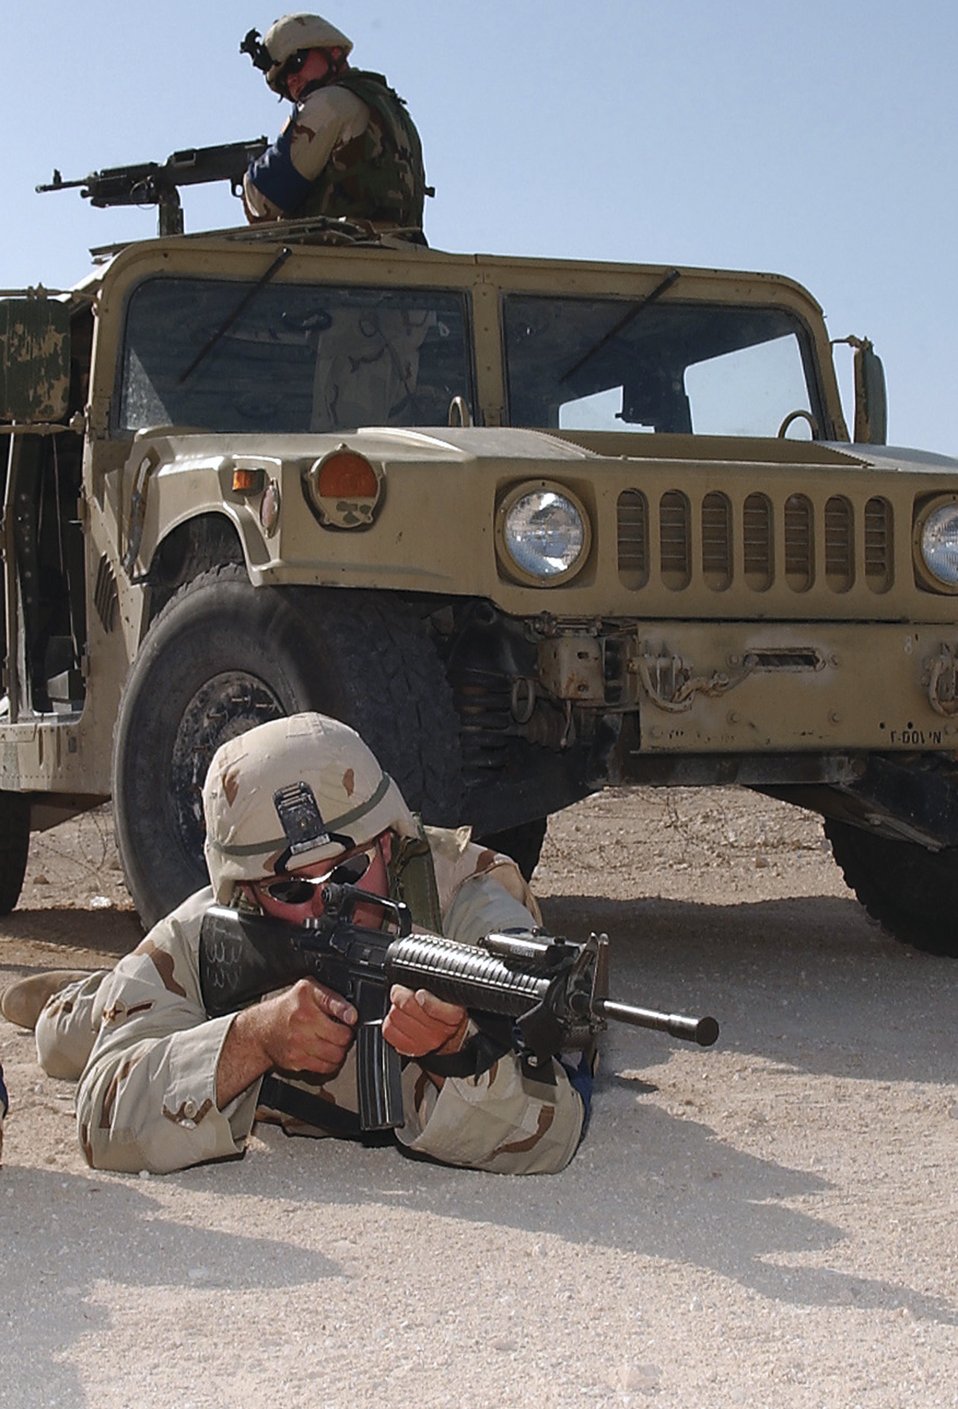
Young Airmen protect base, people

SOUTHWEST ASIA -- Two 379th Expeditionary Security Forces Squadron Airmen guard the flightline perimeter at a forward-deployed location.